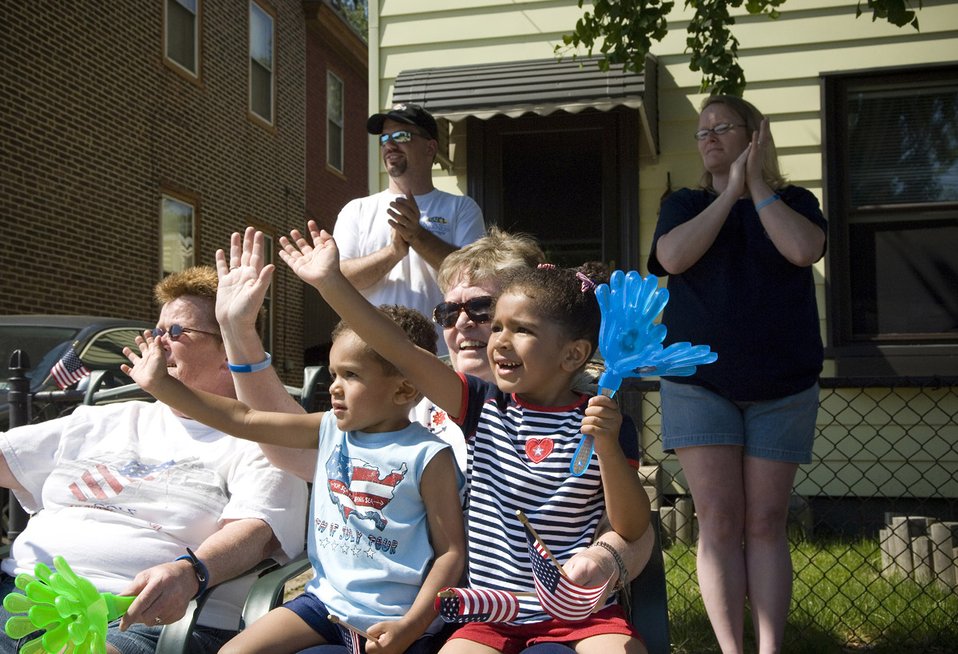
Philly Air Force Week

Kiyoan and Akeem Thorton (center) sit on their grandmother's lap, cheering Airmen participating in the Bridesburg Memorial Day Parade May 26. Bridesburg is a borough in Philadelphia and hosted the kickoff celebrations for Air Force Week Philadelphia. Air Force Week Philadelphia is an event designed to build new relationships in the Philadelphia metropolitan area and strengthen public support for the Air Force mission and Airmen serving worldwide in the war on terrorism.